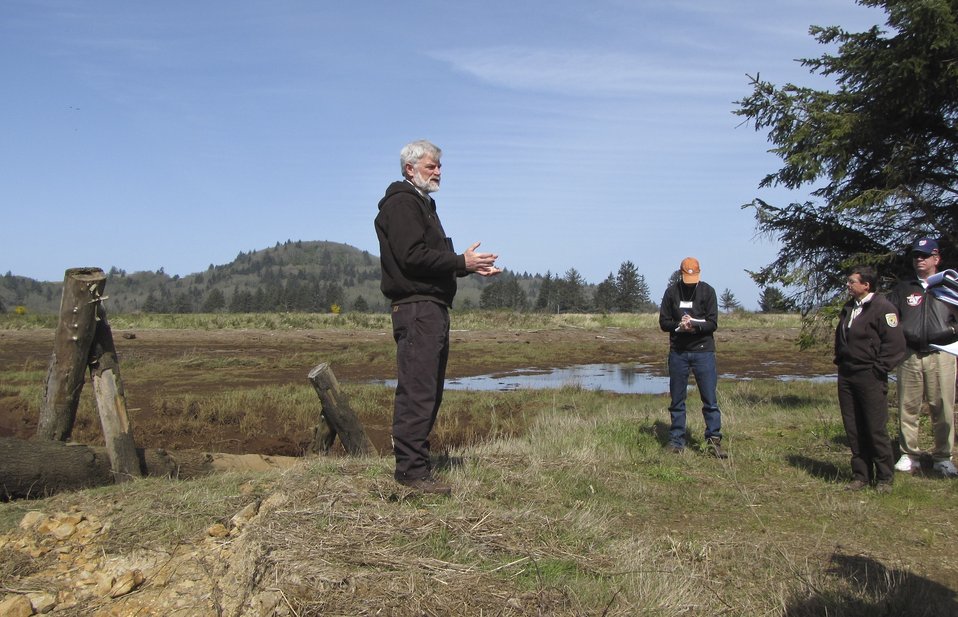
Roy Lowe, manager of the Oregon Coast National Wildlife Refuge Complex, talks with visitors about the complex's habitat restoration efforts. (USFWS)